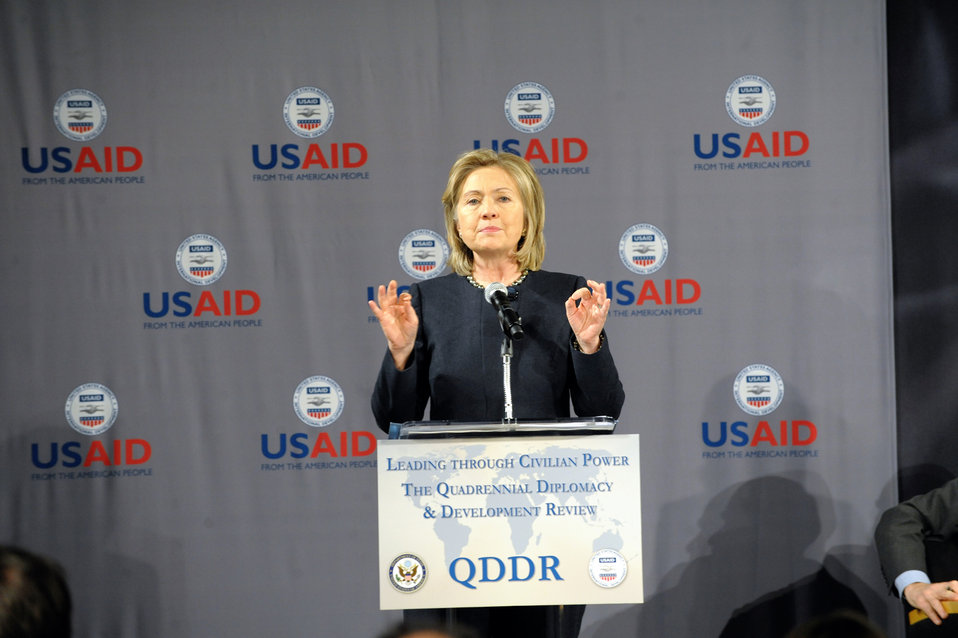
Secretary Clinton Delivers Remarks on the QDDR at USAID

U.S. Secretary of State Hillary Rodham Clinton delivers remarks at a Town Hall on the Quadrennial Diplomacy and Development Review at USAID at the Ronald Reagan Building in Washington, D.C., on December 17, 2010.